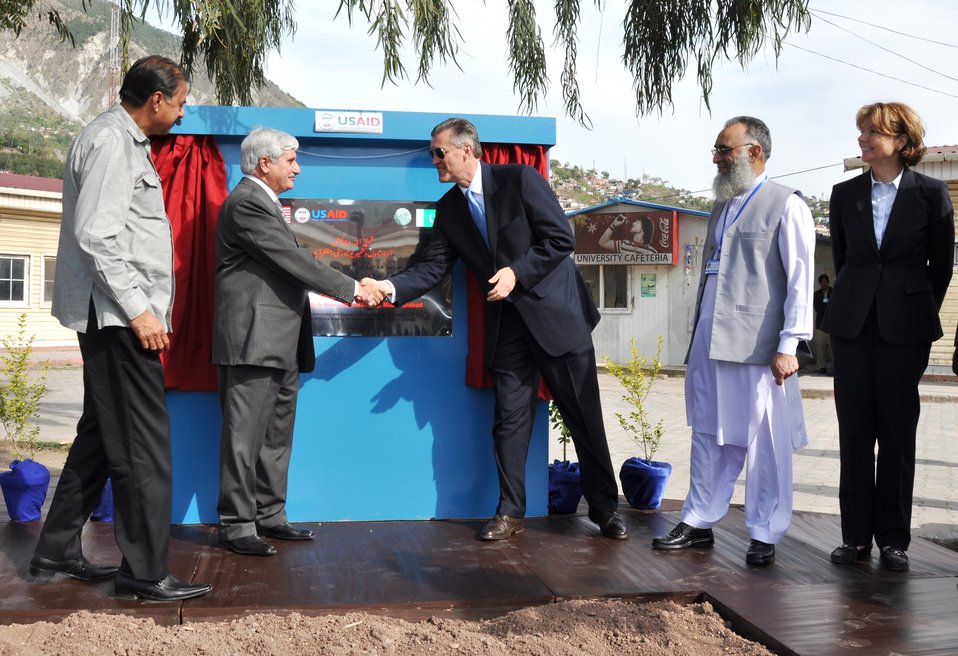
The United States Ambassador to Pakistan, Richard Olson broke ground for a U.S. funded construction of a new Faculty of Education building in Muzaffarabad, AJK. 18